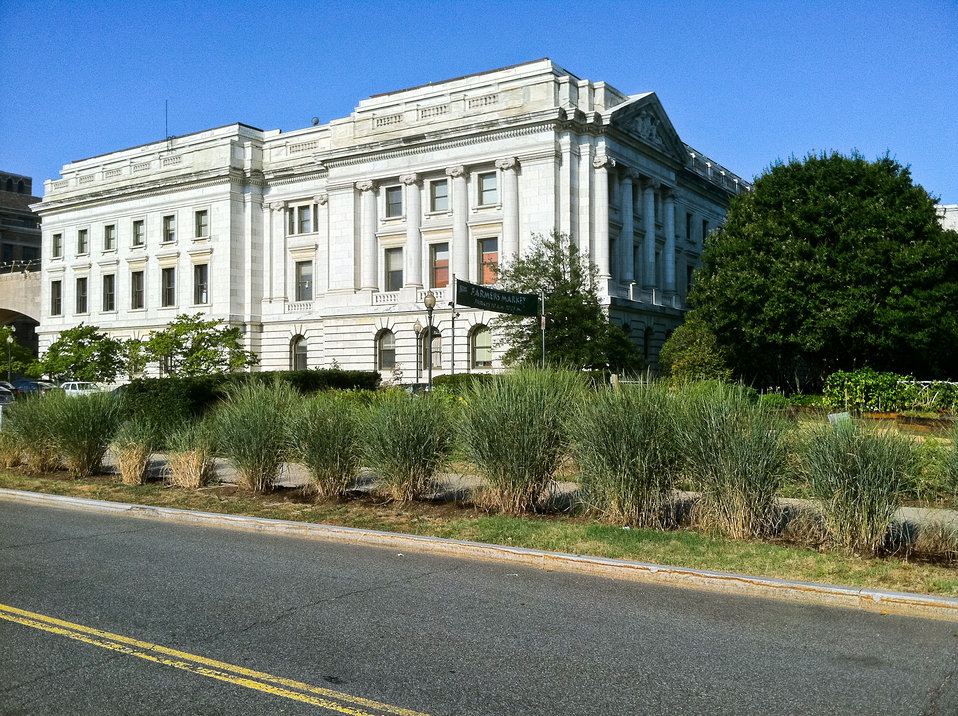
Switchgrass is both a perennial and self-seeding crop and farmers do not have to plant and reseed after annual harvesting. An established switchgrass stand can survive for ten years or longer. Unlike corn, switchgrass can grow on marginal lands and requires relatively modest levels of chemical fertilizers. Overall, it is considered a resource-efficient, low-input crop for producing bioenergy from farmland. This photograph shows switchgrass growing in the People’s Garden at the U.S. Department of Agriculture (USDA), in Washington, DC, on Tuesday, Aug. 2, 2011.